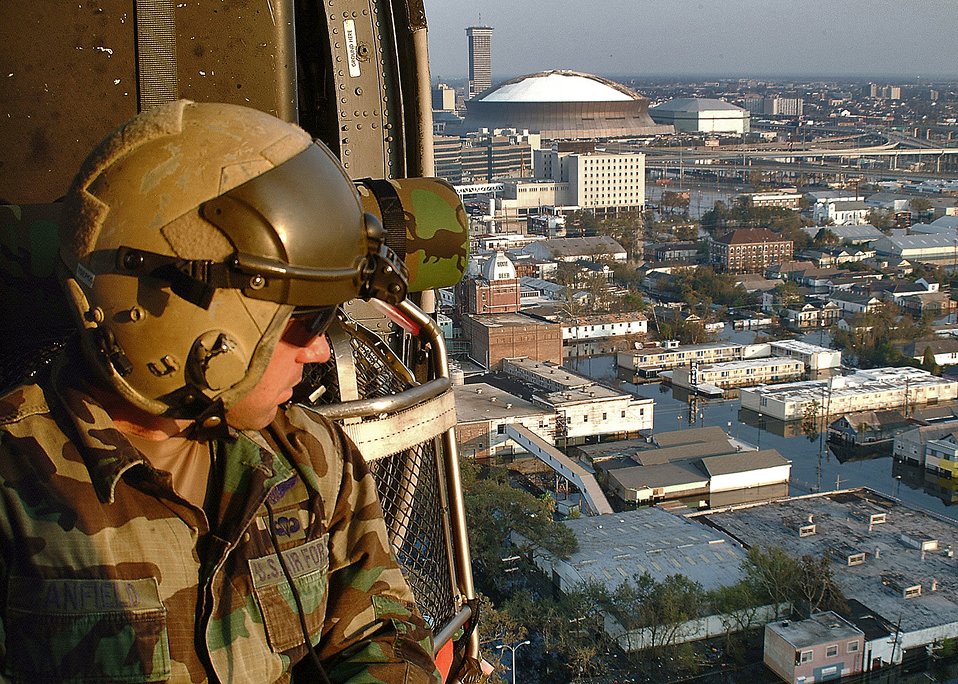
Rescue operations

NEW ORLEANS -- With a combined force of 26 helicopters and about 400 people, pararescue teams composed of reservists and active duty Airmen are flying 8- to 10-hour missions over New Orleans' flooded city to save lives. Rescuing more than 2,000 people in five days, the pararescue teams locate and retrieve the residents, drop them off at a collection point, and then circle around again looking for more.